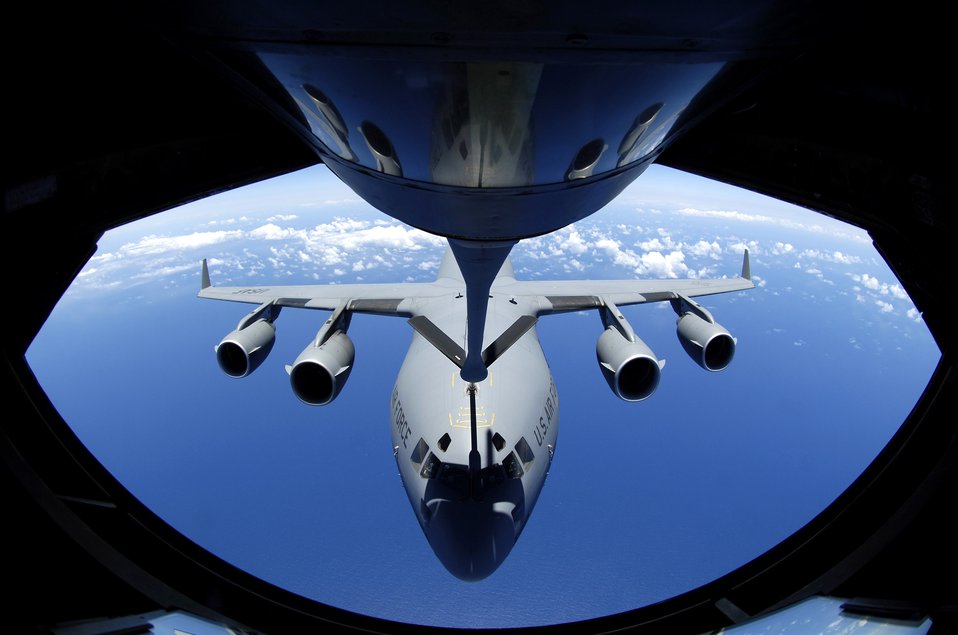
KC-135, C-17 crews rendezvous for refuel readiness

A C-17 Globemaster III approaches the boom of a KC-135 Stratotanker June 18 during aerial refueling practice. A KC-135 Stratotanker from the 909th Air Refueling Squadron, at Kadena Air Base, Japan is at Hickam Air Force Base, Hawaii, practicing with a C-17 Globemaster III from the 535th Airlift Squadron for the Air Mobility Command Rodeo.